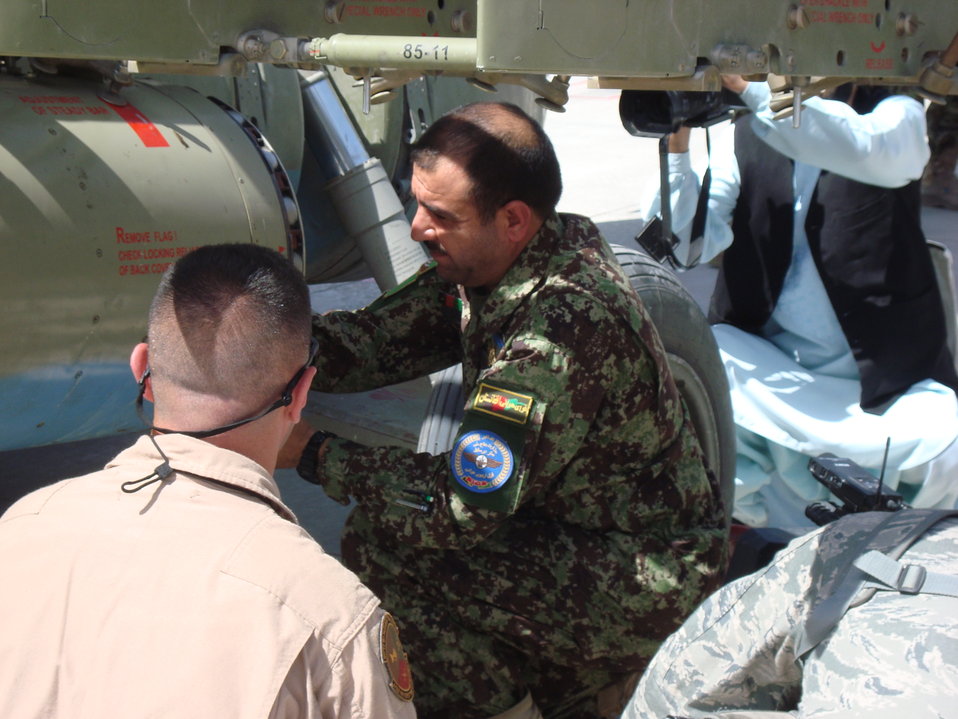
Arming point key to Afghan airpower dominance

Afghan air force Maj. Gen. Sherzai loads a rocket at the first AAF arming point May 15, 2011, Kandahar Airfield, Afghanistan. Kandahar Air Wing officials opened the first Afghan Mi-17 weapons arming point May 15.